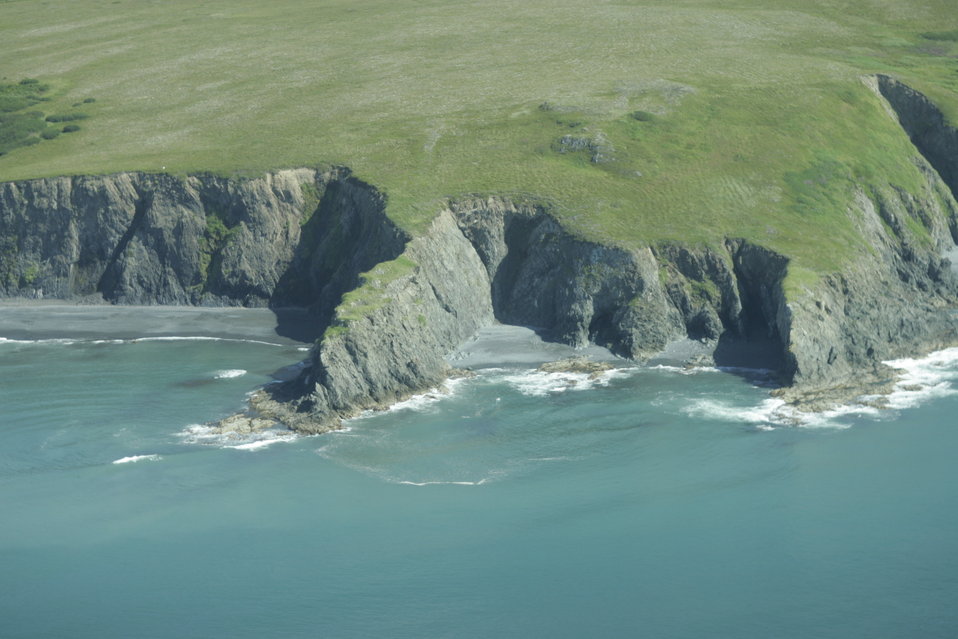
Togiak Nation Wildlife Refuge